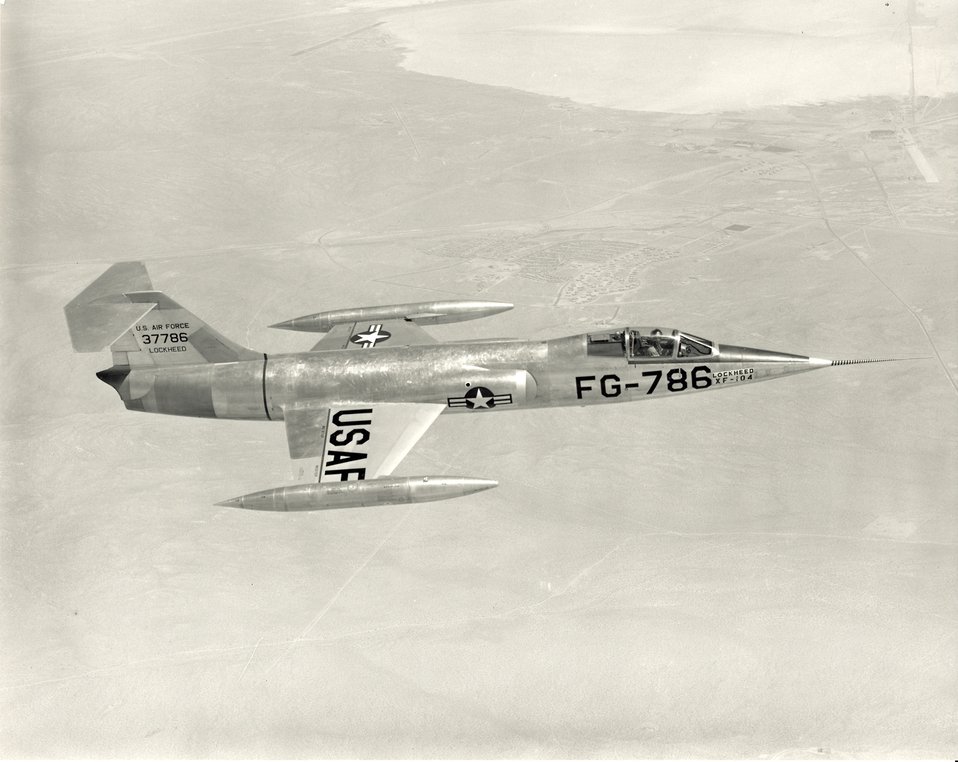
XF-104, prototype for the F-104 Starfighter

The prototype for the world's first Mach 2 fighter, the XF-104 from Lockheed, made its first flight Feb. 28, 1954, at Edward Air Force Base, Calif.